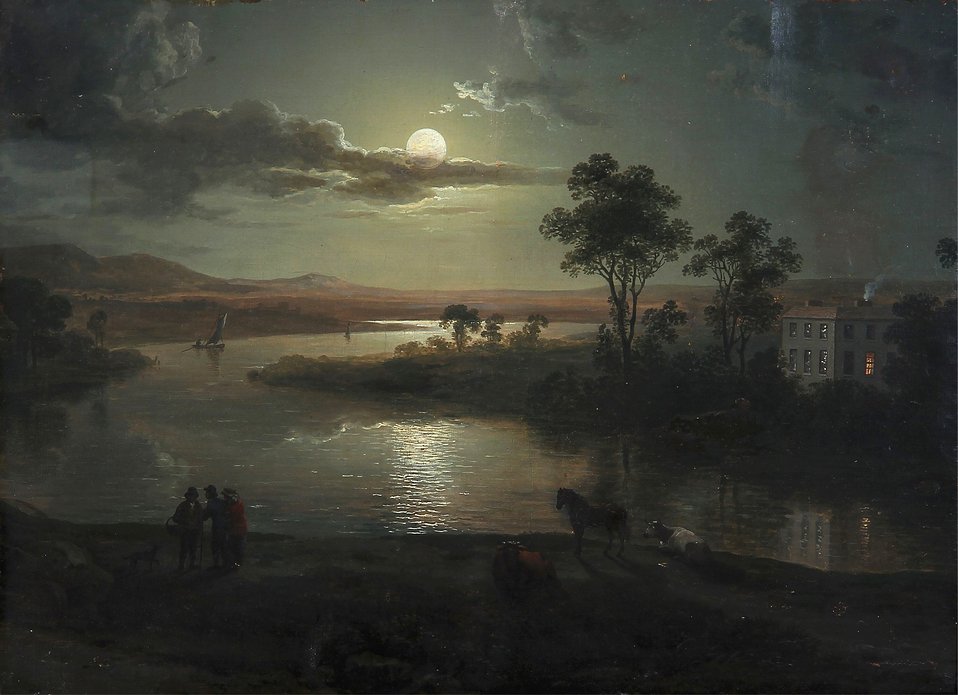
Abraham Pether - Evening scene with full moon and persons (1801)